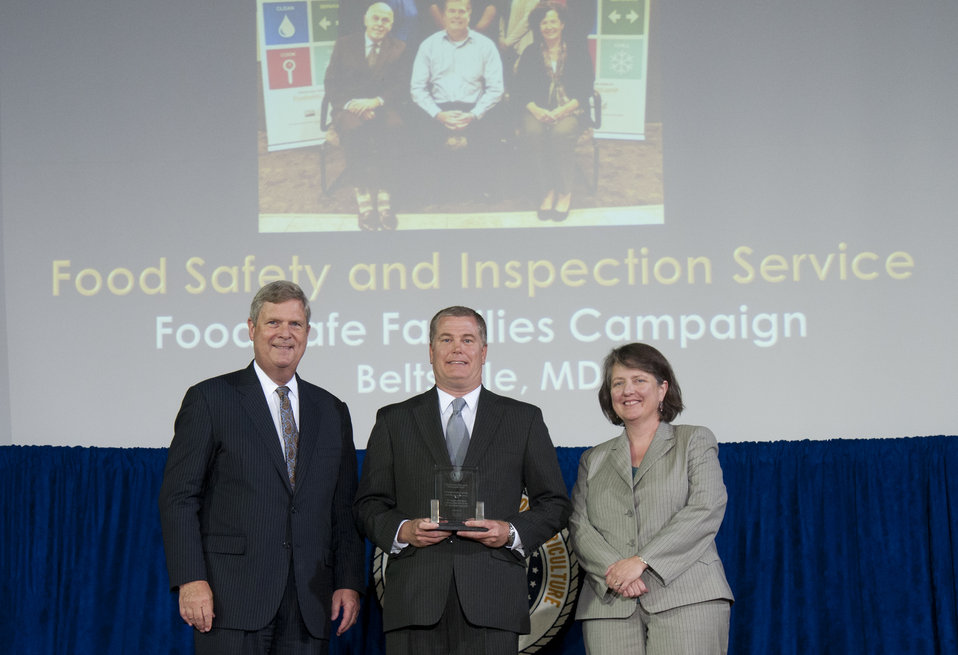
Agriculture Secretary Tom Vilsack and Agriculture Deputy Secretary Kathleen Merrigan present the Secretary’s Honor Award to Food Safe Families Campaign Food Safety and Inspection Service (FSIS) group leader Robert Tuverson at the U.S. Department of Agriculture (USDA) 64th Annual Honor Awards Ceremony in Washington, D.C. on Wednesday, Sept. 12, 2012. The Food Safe Families Campaign provided significant achievement in advancing USDA’s public health mission through the development of the Food Safe Families multimedia public service campaign to help families prevent food poisoning.